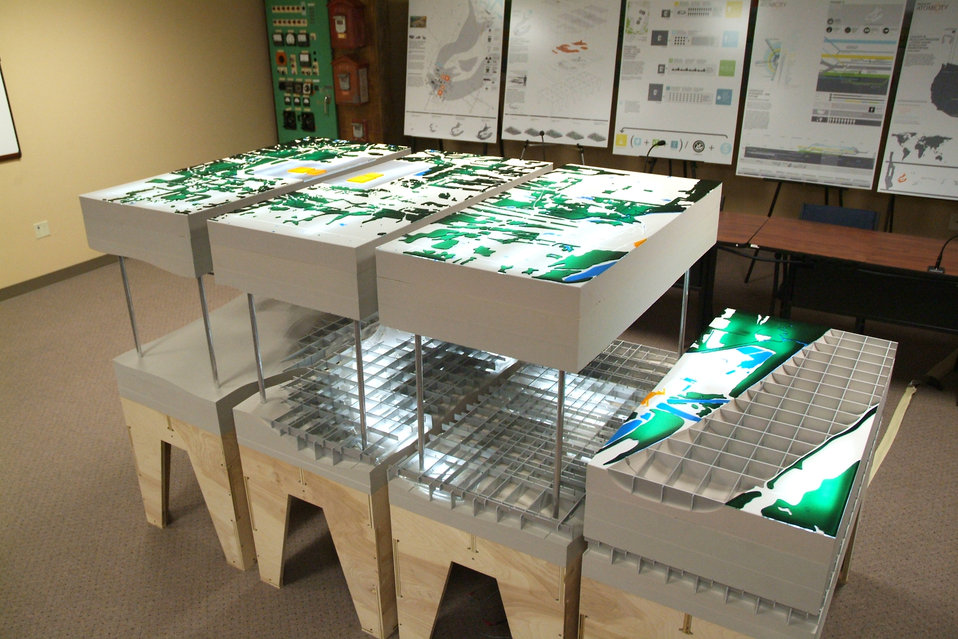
UK Students Imagine DOE’s Paducah Site As Future Technical-Industrial Hub

Shown at the Paducah Citizens Advisory Board office, this model depicts a 10-square-mile area around the Paducah Site to a depth of several hundred feet. Yellow structures depict the site’s four large uranium hexafluoride process buildings.

Over the past year, University of Kentucky students have studied how to preserve, replace, or even build on the more than 3,000 direct and indirect jobs the site currently supports. Future success hinges on interrelated uses such as research and development, education, energy production, manufacturing, and recycling/reclamation, he said.